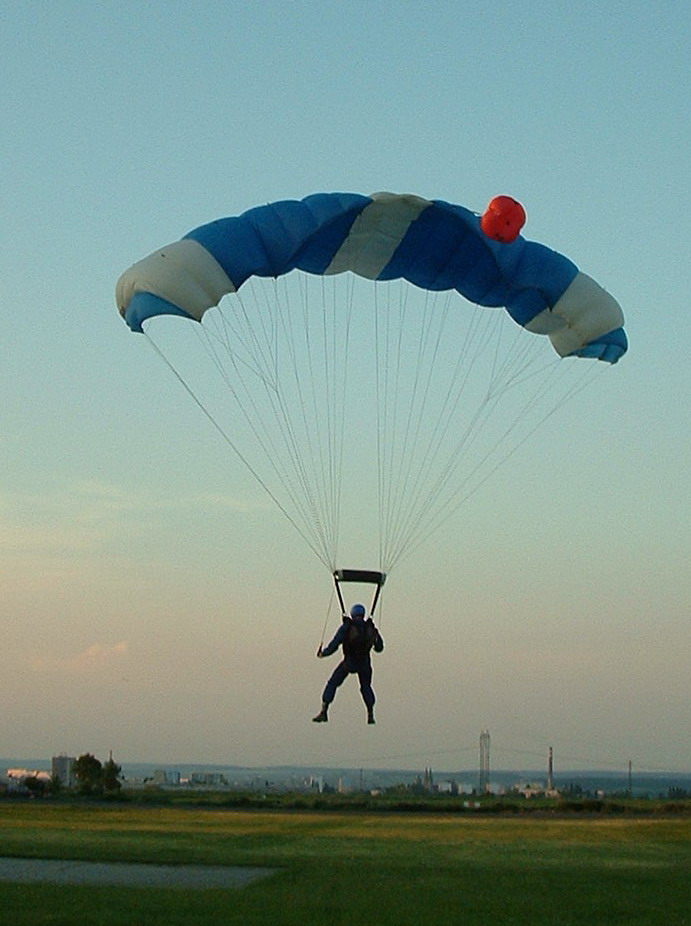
Čeština: Fotografie přistání na padáku. Photo of landing with parachute.